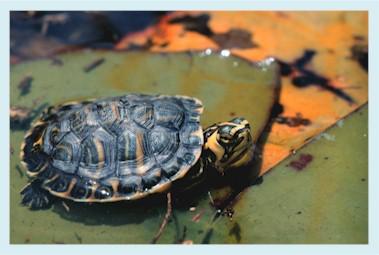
A SLIDER TURTLE ON THE SAVANNAH RIVER SITE.

THE SLIDER TURTLE, OFTEN SEEN ON THE SITE, OCCURS IN EVERY TYPE OF WETLAND AND IS FREQUENTLY OBSERVED BASKING IN THE SUN. THE SAVANNAH RIVER ECOLOGY LABORATORY CONDUCTS A BROAD BASED PROGRAM OF FIELD AND LABORATORY RESEARCH WITH EMPHASIS ON EXPANDING THE UNDERSTANDING OF ECOLOGICAL PROCESSES AND PRINCIPLES AND EVALUATING THE IMPACT OF INDUSTRIAL LAND USE ON THE ENVIRONMENT.